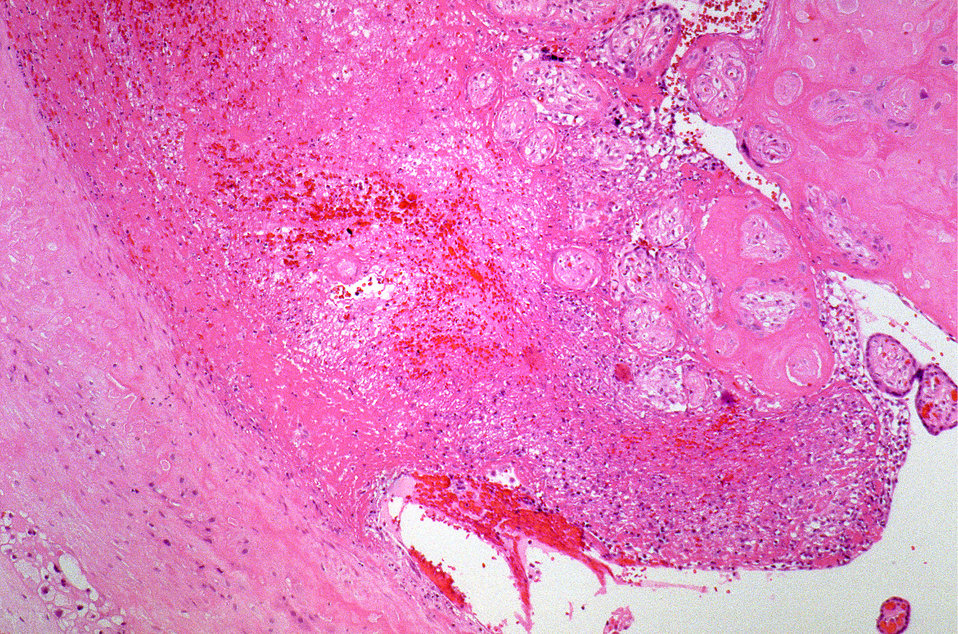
A photomicrograph describing tuberculosis of the placenta.